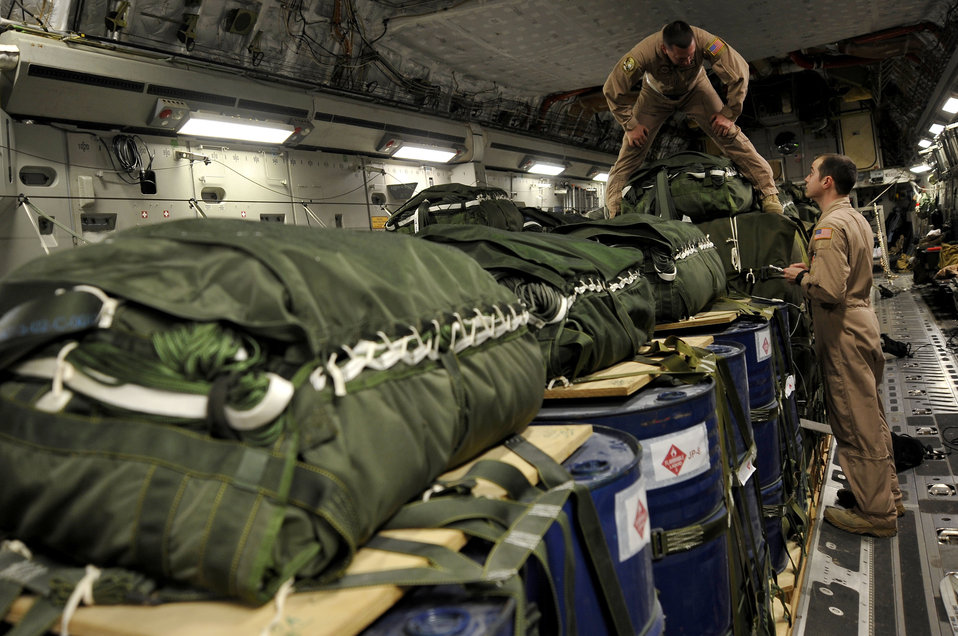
Airmen, Soldiers airdrop supplies to Afghanistan

Tech. Sgt. Todd O' Bryant speaks with Staff Sgt. Jeffrey Harmon at an air base in Southwest Asia Jan. 9, 2010, about the cargo on a C-17 Globemaster III. The sergeants are loadmasters with the 816th Expeditionary Airlift Squadron and are inspecting container delivery system bundles that will be dropped to ground forces in Afghanistan.